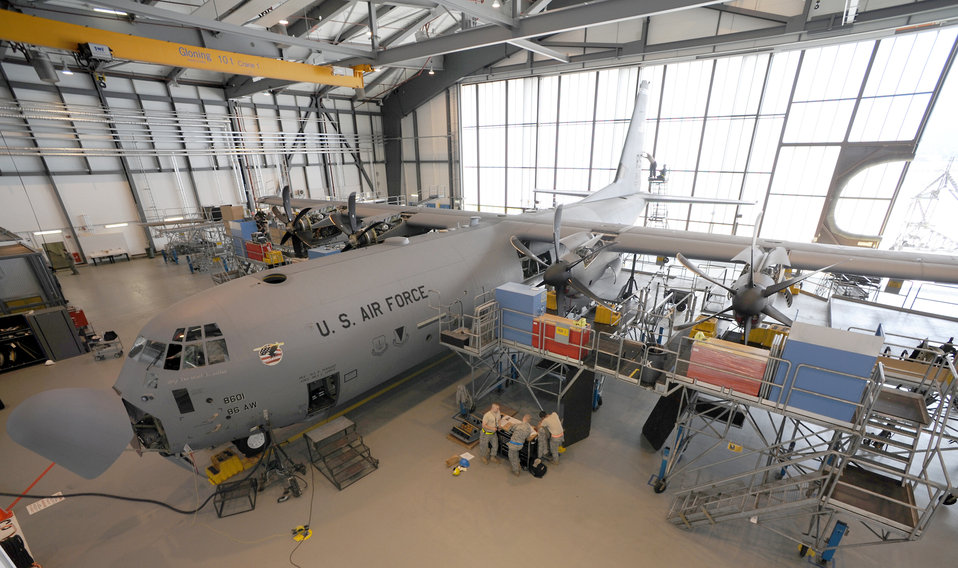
1st Isochronal Inspection

Members of the 86th Maintenance Squadron isochronal inspection team perform an inspection on a C-130J Super Hercules May 26, 2010, at Ramstein Air Base, Germany. This is the first C-130J all active-duty isochronal inspection done in the Air Force.